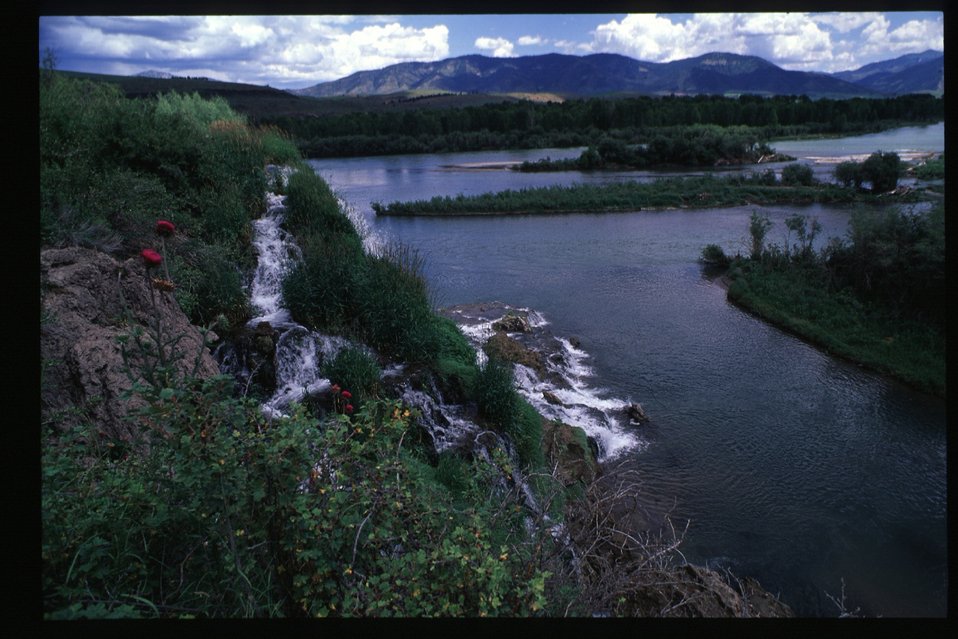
Scenic waterfall Falls Creek Falls Snake River Canyon USRD Upper Snake River District